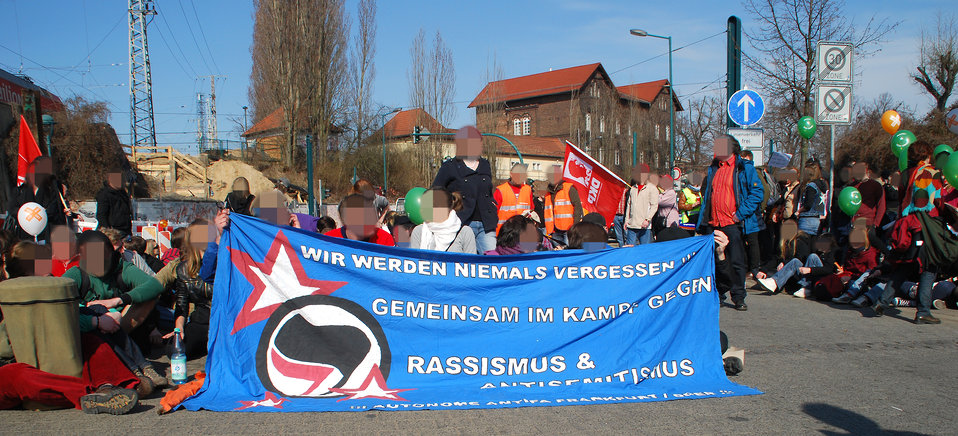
Proteste gegen den Nazi-Aufmarsch am 24.3.2012 in Frankfurt (Oder)